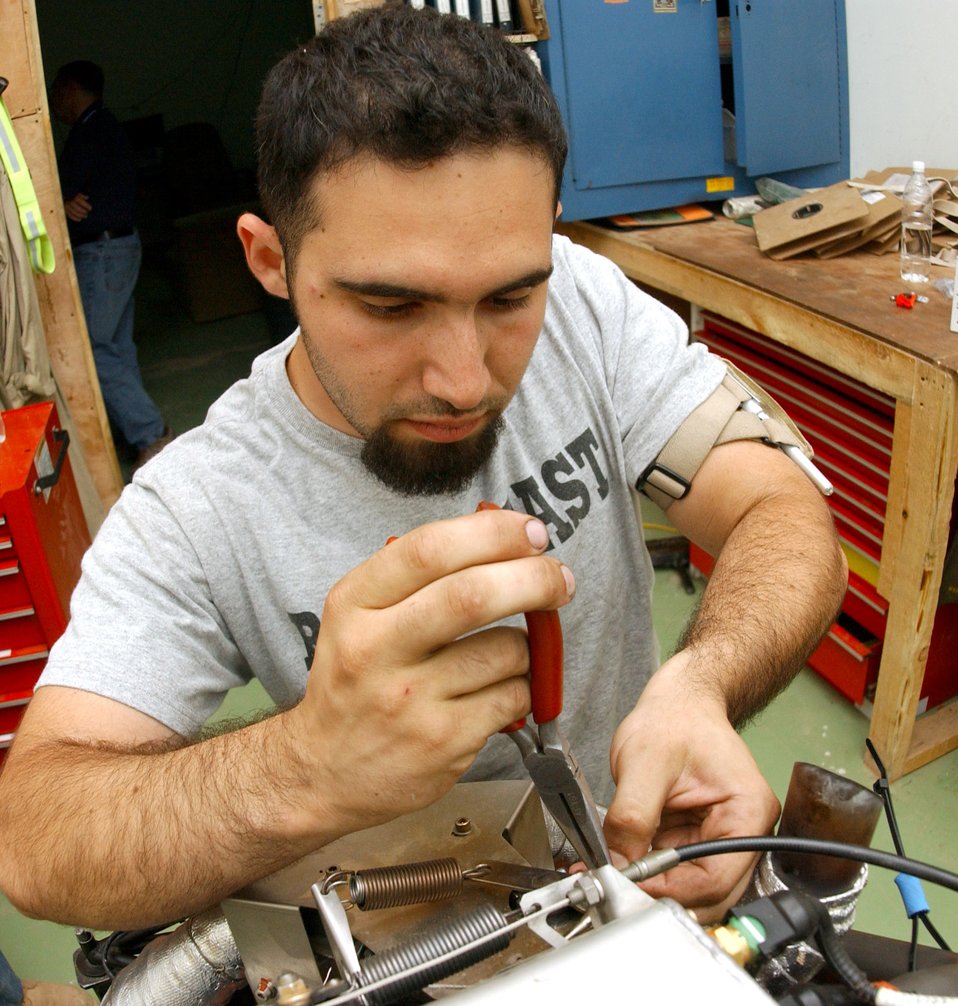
Predator maintenance team is 'total force'

Robert Attard works on an engine from an RQ-1 Predator unmanned aerial vehicle. Mr. Attard is a contract maintainer assigned to the 46th Expeditionary Aircraft Maintenance Unit at Balad Air Base, Iraq.